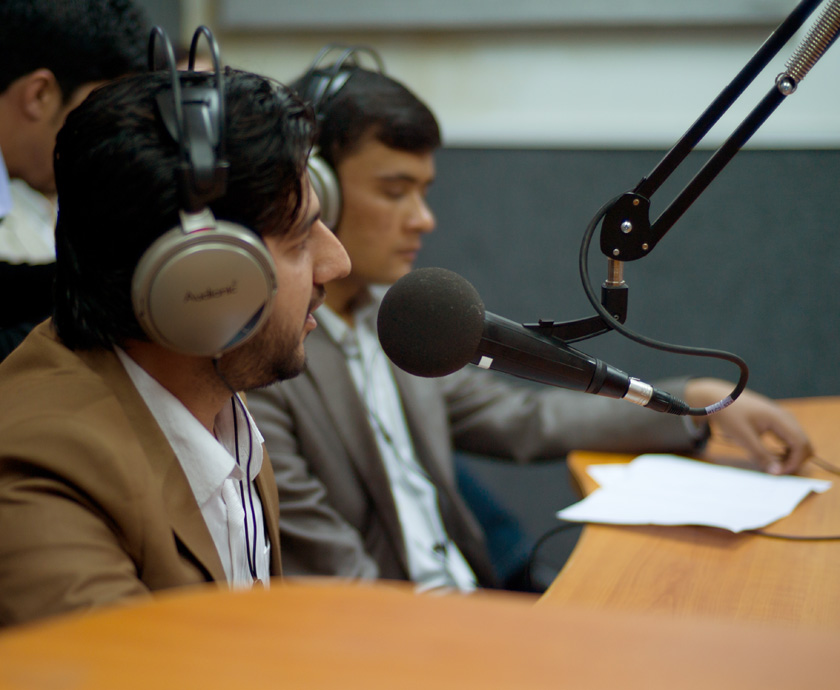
Male student asking a question